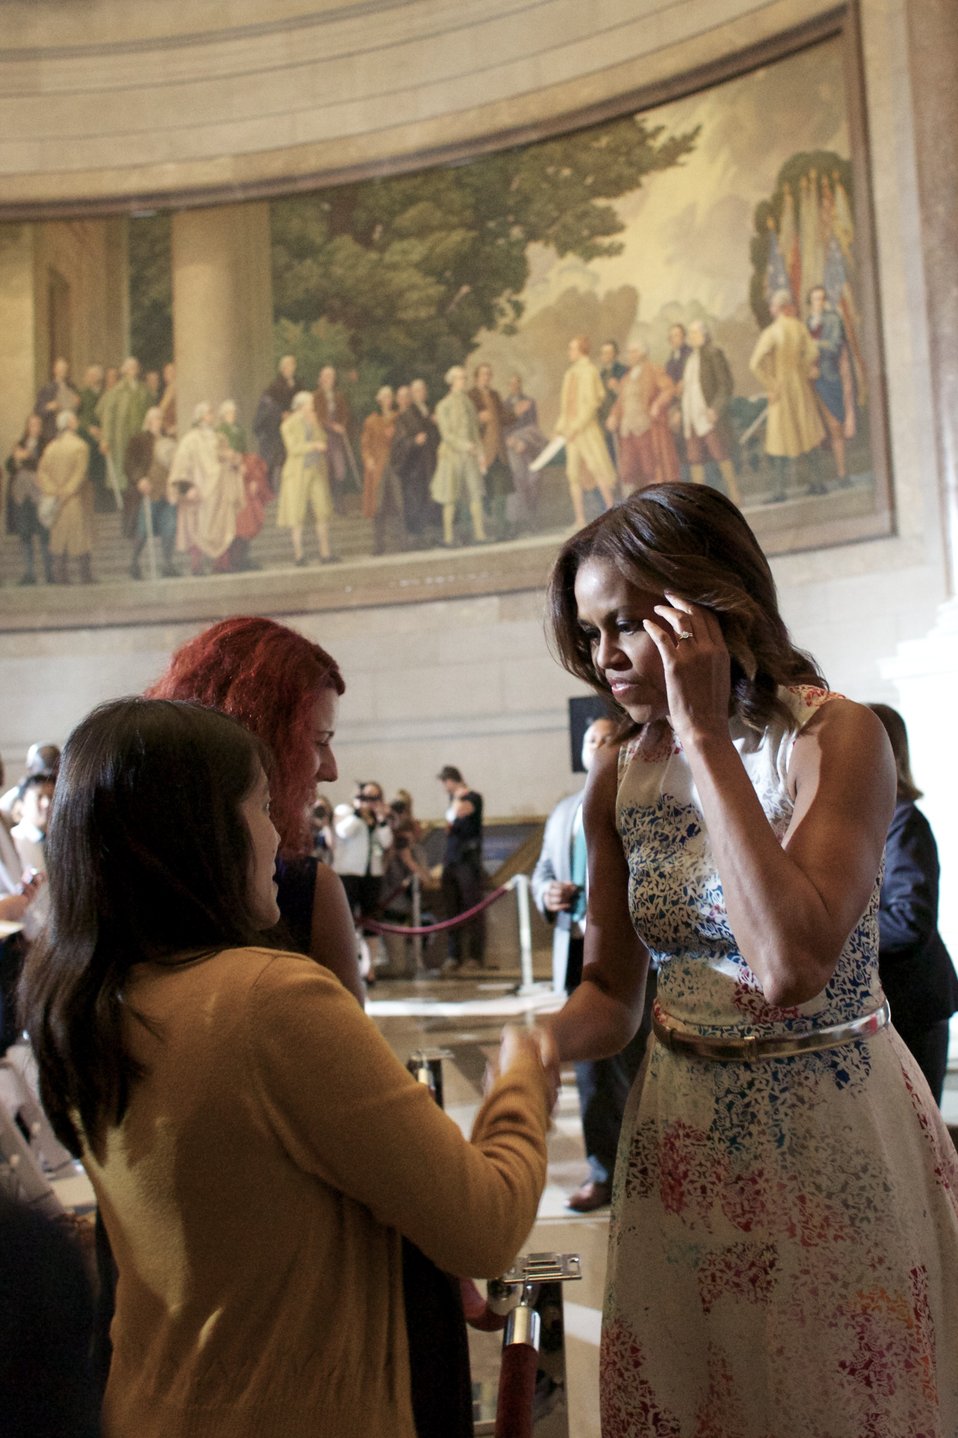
Naturalization Ceremony with Michelle Obama